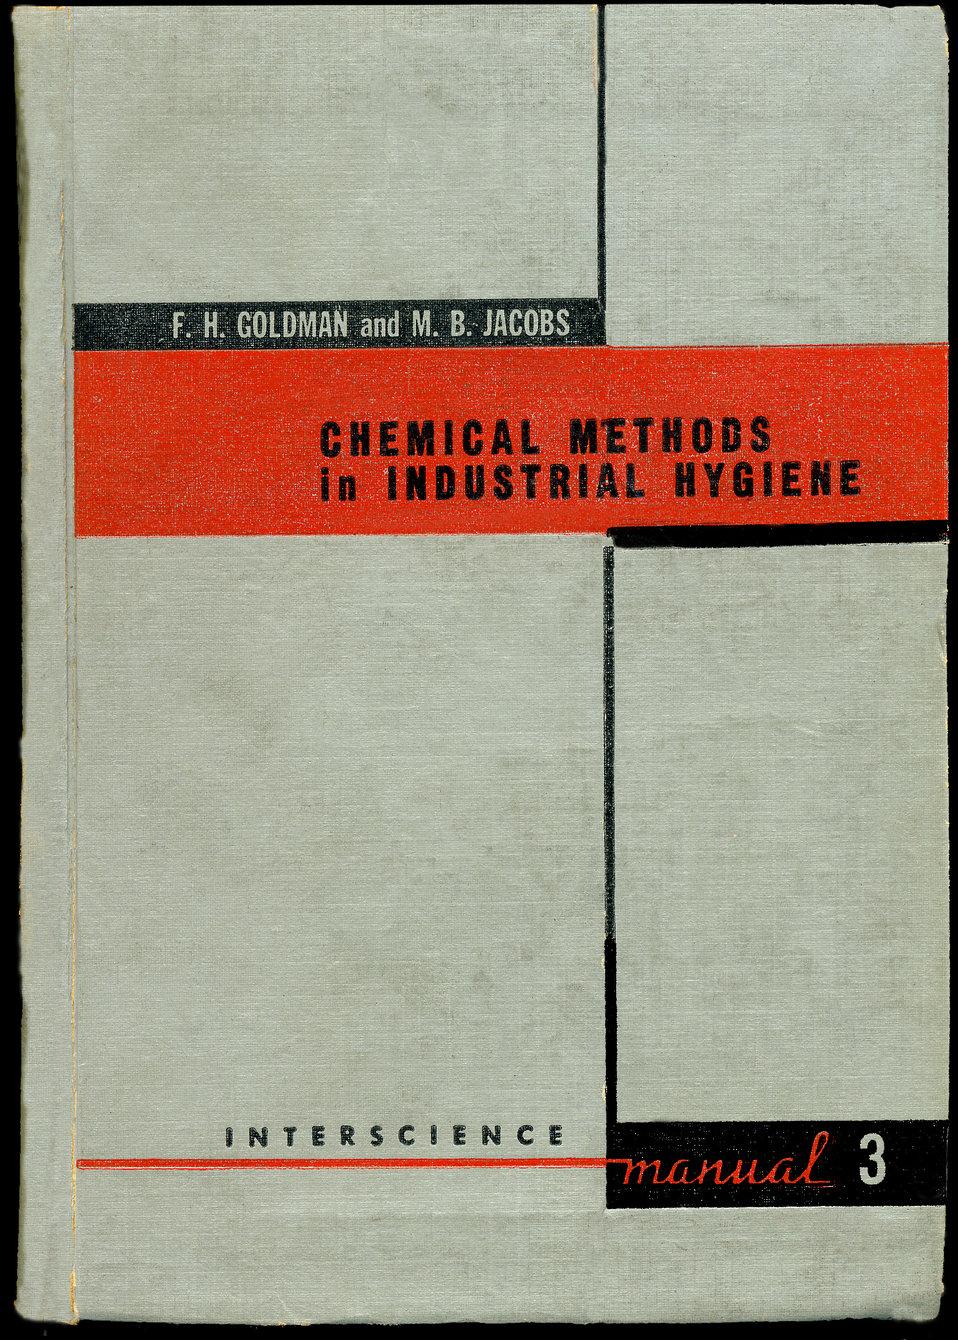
This photograph, provided by the Center for Disease Control's (CDC), National Institute for Occupational Safety and Health (NIOSH), depicted the cover of a 1953 laboratory manual entitled, 'Chemical Methods in Industrial Hygiene', by Drs. F. H. Goldman and M. B. Jacobs. It was in Dr. Goldman's laboratory in which PHIL images 9753, 9754, 9755, 9762, 9763, 9764, 9765, 9766, 9767, 9768, 9769, 9770, 9771, 9772, and 9773, were captured.